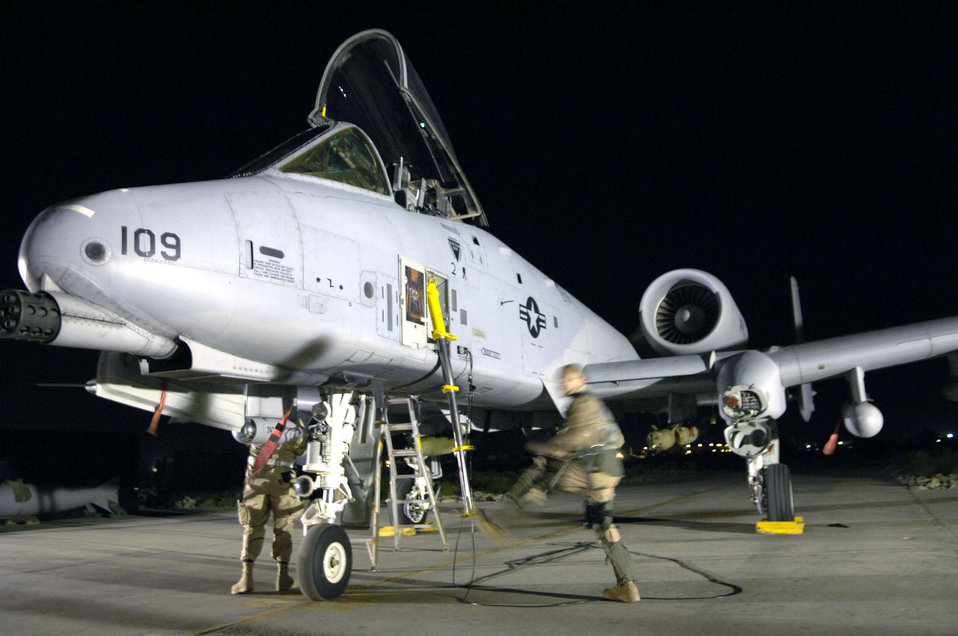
A-10, ready for action

Capt. Jason Shemchuk exits his plane at Bagram Air Base, Afghanistan, after flying a mission July 6 in support of Operation Enduring Freedom. The A-10 is used for close-air support. Captain Shemchuk is assigned to the 81st Expeditionary Fighter Squadron.